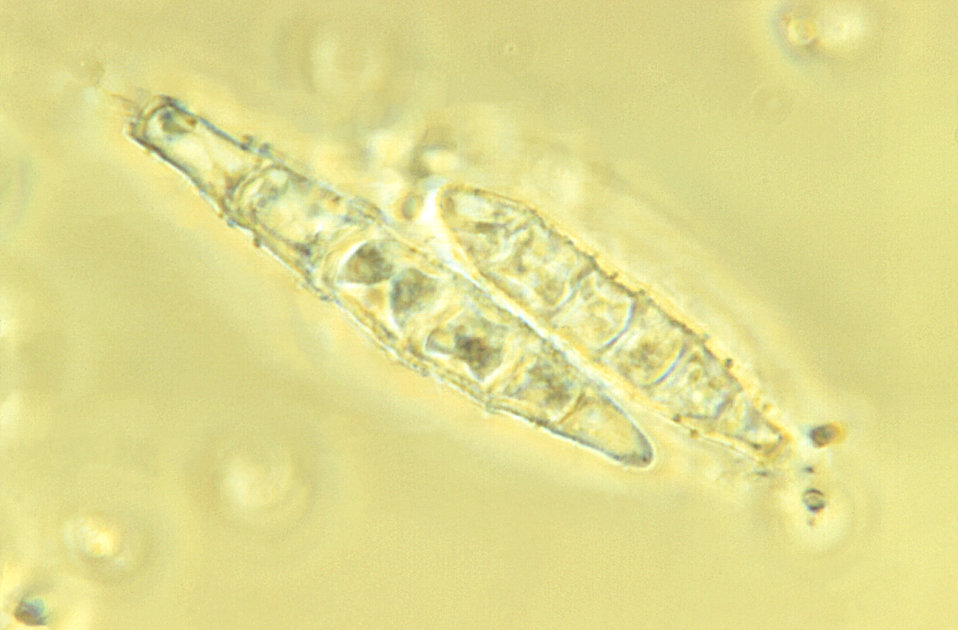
Characterized as 'echinulate', or spiny, this photomicrograph depicted a number of Microsporum persicolor fungal macroconidia. Under this relatively-high magnification of 1125X, the ultrastructural morphology exhibited by these elongated, roughened spore clusters can be observed.